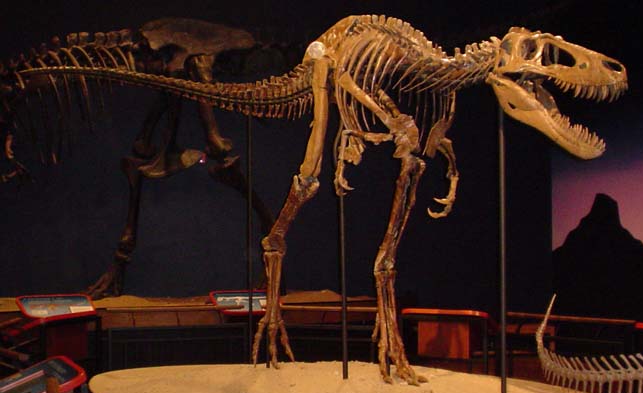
Jane at the Burpee Museum in Rockford, Illinois.